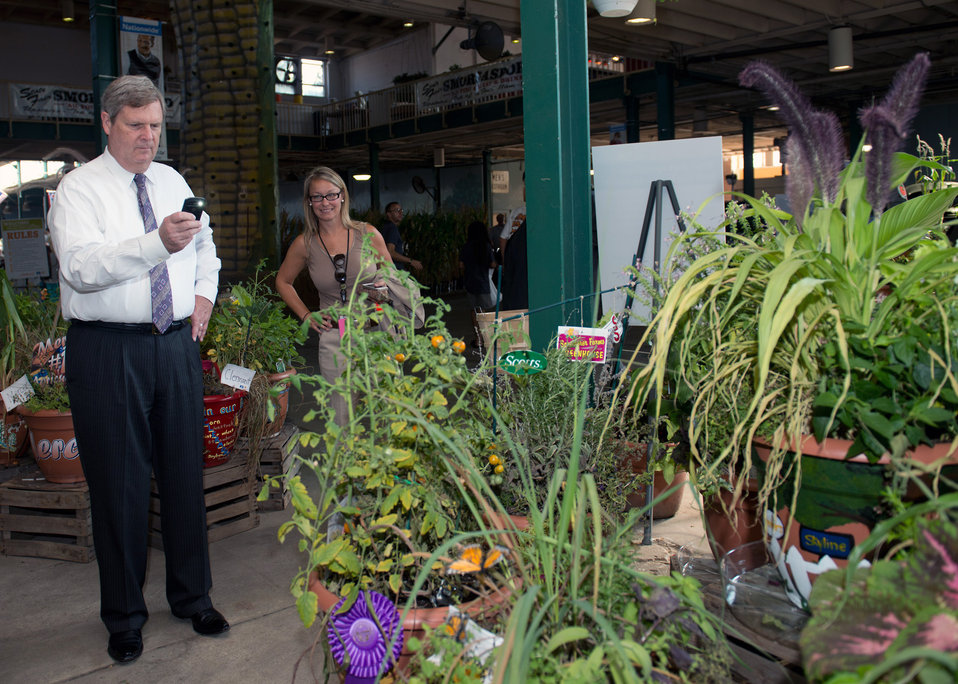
Agriculture Secretary Tom Vilsack and Ohio State Fair Commissioner Jennifer Lynch visit exhibits in the Agricultural and Horticultural Building at the Ohio State Fair in Columbus, OH on Friday, August 3, 2012.